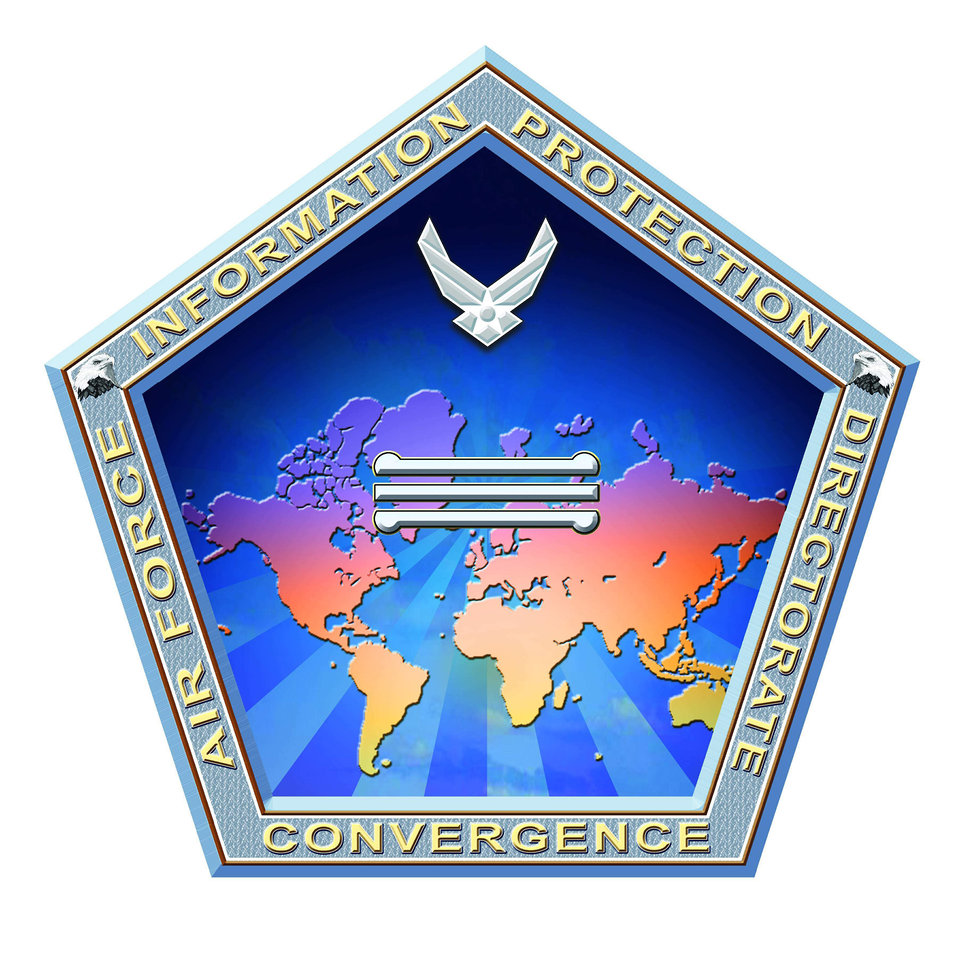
Air Force focuses on information protection

The recent spate of cyber attacks against government systems has gotten the attention of the administration and the Department of Defense. Just as flight indelibly altered the way the Air Force operated in the 20th century, the information explosion promises to significantly shape the way the nation fights and wins its current wars.